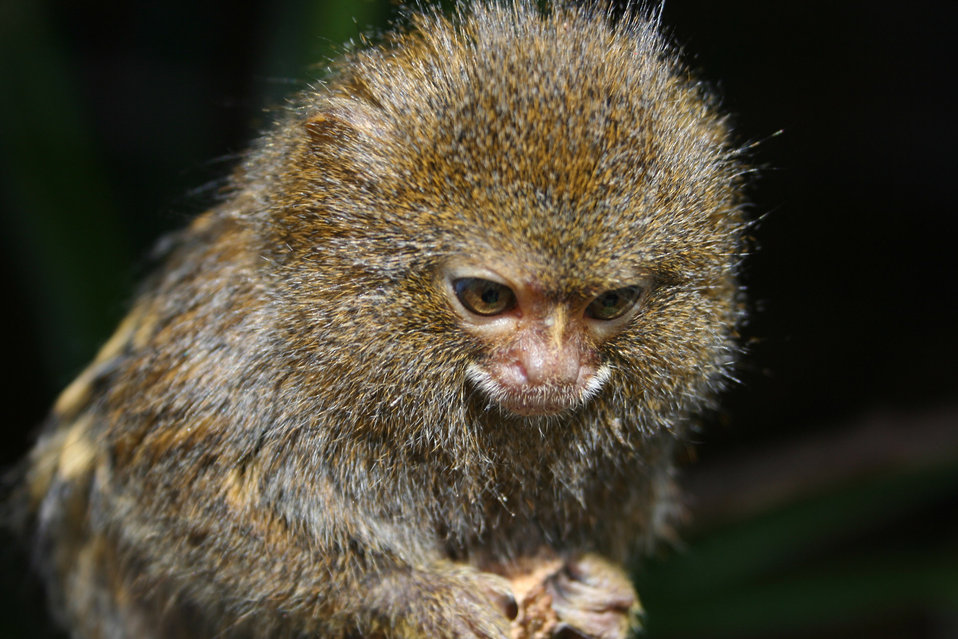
Monkey

Cute monkey.